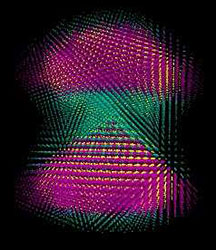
Visualization of the S-orbitals of two individual quantum dots. The presence of significant S-orbitals between the dots indicates that tunneling is probable between the structures. While the structures are not connected physically, they are connected via quantum tunneling. They also created visualizations that show the orbitals and linear combinations of these orbitals as well as lines whose intersections show the locations of the atoms.